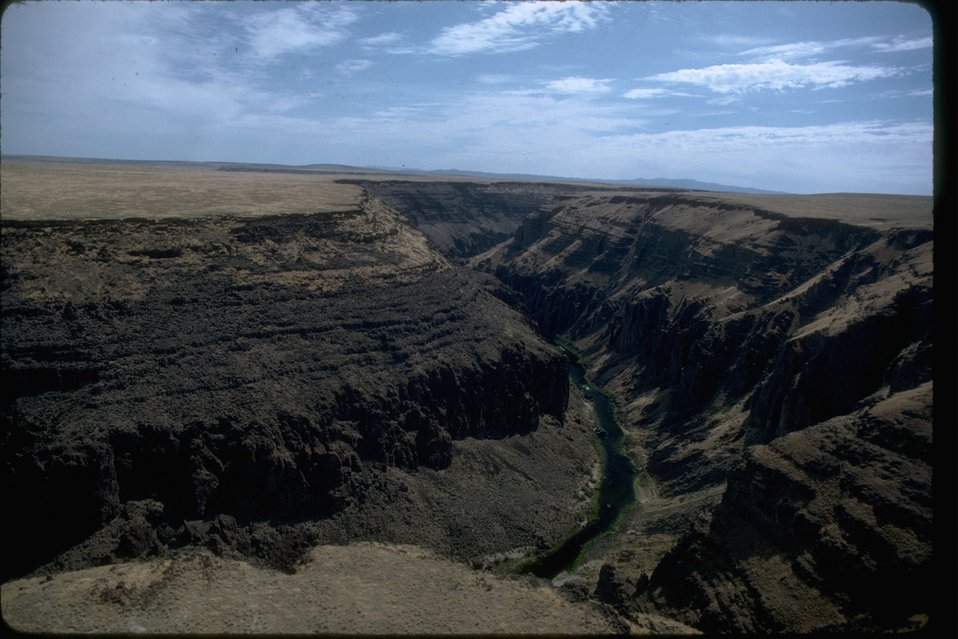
Rim rock view of the steep canyon of Lower Owyhee and river below the Owyhee. OR 3-110